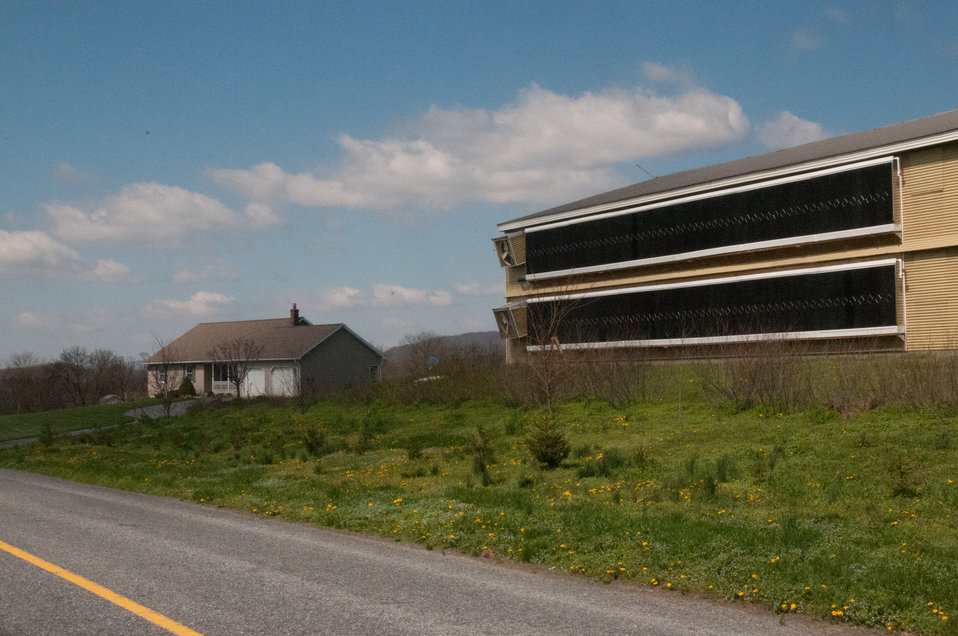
The Roxanne Molnar Farm, on Thursday, April 21, 2011. Owned by Roxanne and Matthew Molnar it is an 80,000 chicken farm, in Grantville, PA, on Thursday, April 21, 2011. They were the recipients of a $20,000 Rural Energy for America Program (REAP) grant. The money is a portion of the cost to modernize the second of two 40,000 chicken capacity chicken houses. Chickens need to be kept at a comfortable temperature to remain productive. New radiant heaters keep the chickens warm during Pennsylvania winters in their hilltop location. On warm days, ceiling vents provide passive venting of heat out of the building; when chicken temperatures are estimated to be above 90 degrees, fans come on, pulling air through water evaporator elements seen (black panel, that bring air temperature down 10-15 degrees) and flows along the chicken house's length, in effect a tunnel of cooled air. The benefits to the chickens are heat and excess moisture removal; minimized dust and odor; limits buildup of ammonia and carbon dioxide; and provides oxygen for respiration. The old system of six fans on each side of the chicken houses simply moved air in the immediate area without a specific flow pattern.